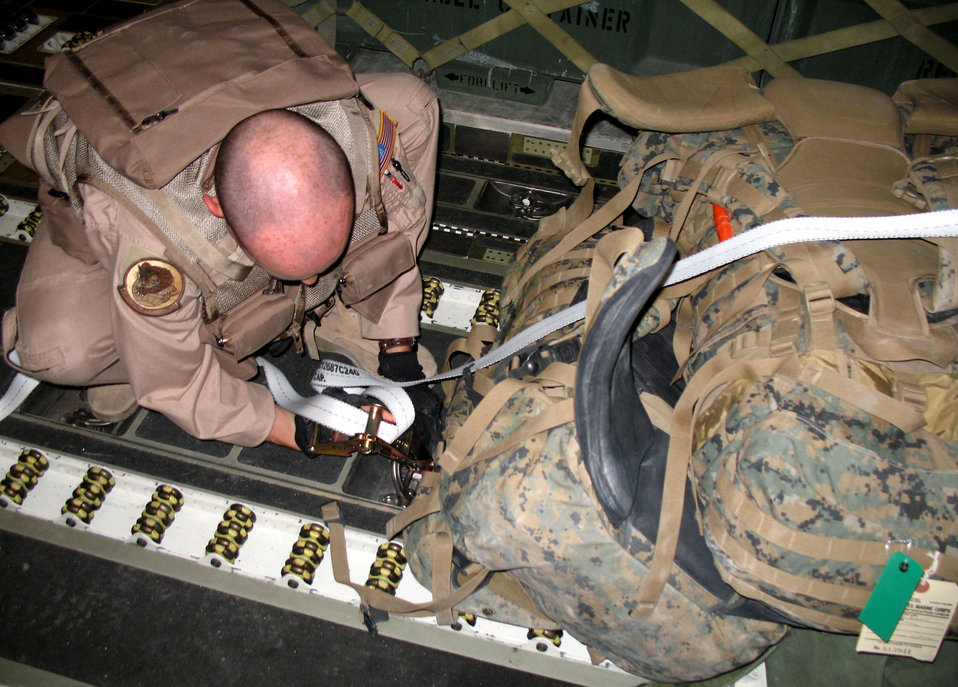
C-17 missions play vital role in war on terrorism

Staff Sgt. Ryan Page adjusts the cargo straps on a load of cargo in the back of a C-17 Globemaster III during a mission to Baghdad. The C-17, from the 15th Airlift Wing at Hickam Air Force Base, Hawaii, was on a one-week mission to fly supplies and personnel into and out of Iraq. Sergeant Page is a loadmaster with the 535th Airlift Squadron at Hickam.